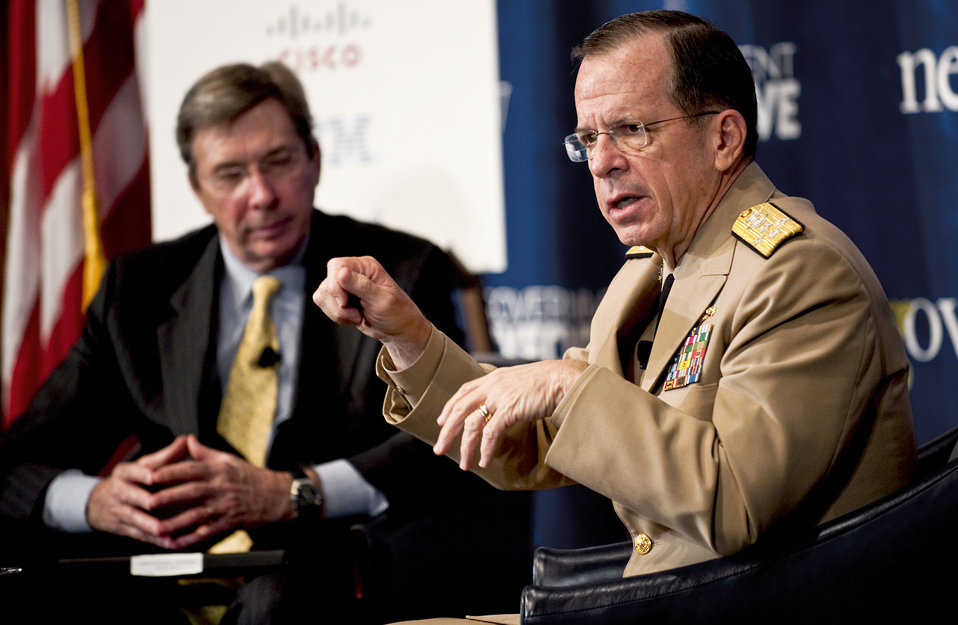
Cleared for release by Joint Staff Public Affairs

Navy Adm. Mike Mullen, the chairman of the Joint Chiefs of Staff, addresses participants at the leadership breakfast for the Government Executive Media Groups April 28, 2011, at the National Press Club in Washington.